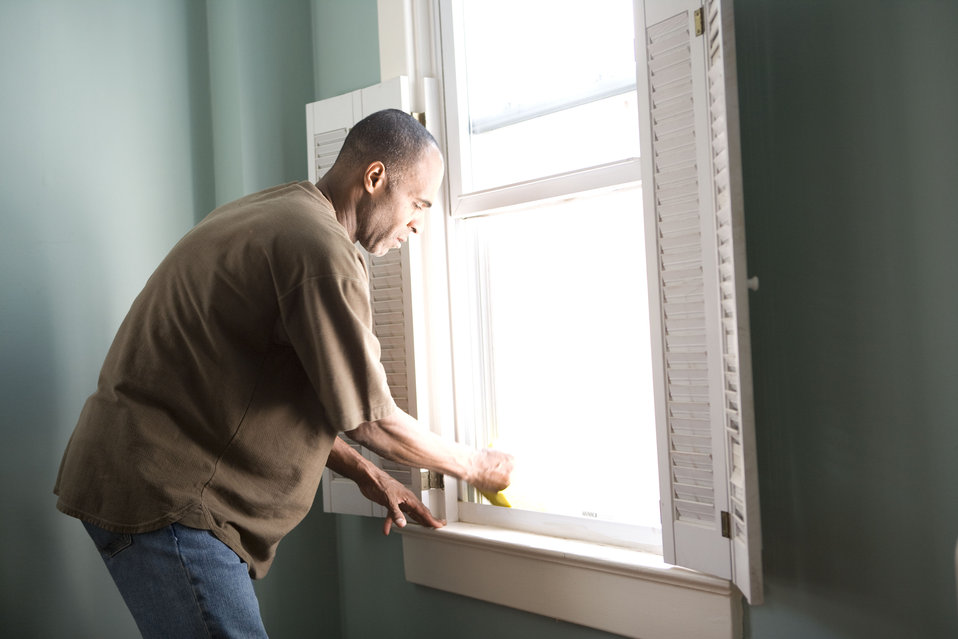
When renovating a home, you should use a damp sponge or cloth to clean dust collected on a window sill, as the dust may contain asbestos or lead-based paint. Home maintenance is an ongoing process for any homeowner, and here we see an African-American man as he was preparing a window in his home for a general cleaning.